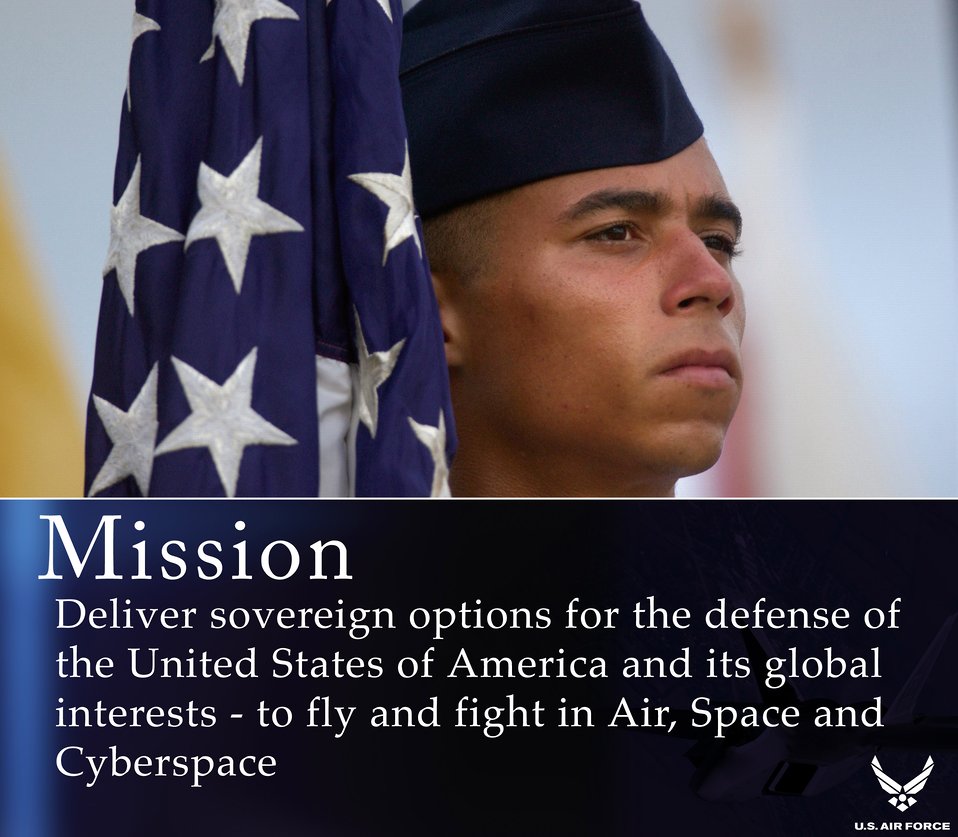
On parade

LACKLAND AIR FORCE BASE, Texas (AFPN) -- Airman Herbert Hall prepares to participate in a basic military training graduation parade here. The parade of 15 squadrons marked the end of the six-week training period for about 750 of the Air Force's newest Airmen.